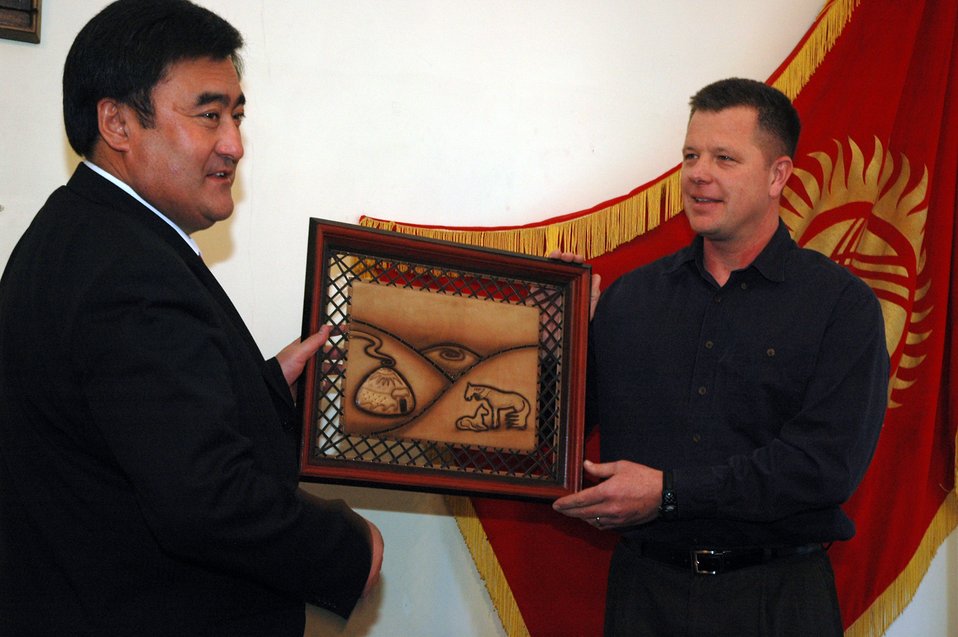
Manas Airmen reunite sister cities Bishkek, Colorado Springs

Bishkek, Kyrgyzstan, Mayor Arstankbek Nogoyev presents a gift for Colorado Springs, Colo., Mayor Lionel Rivera to Maj. Scott Suckow. Airmen deployed to Manas Air Base, representing the city of Colorado Springs, Colo., paid a visit to the mayor of its Sister City, Bishkek, Kyrgyzstan, March 14. Major Suckow is assigned to the 376th Expeditionary Medical Group.